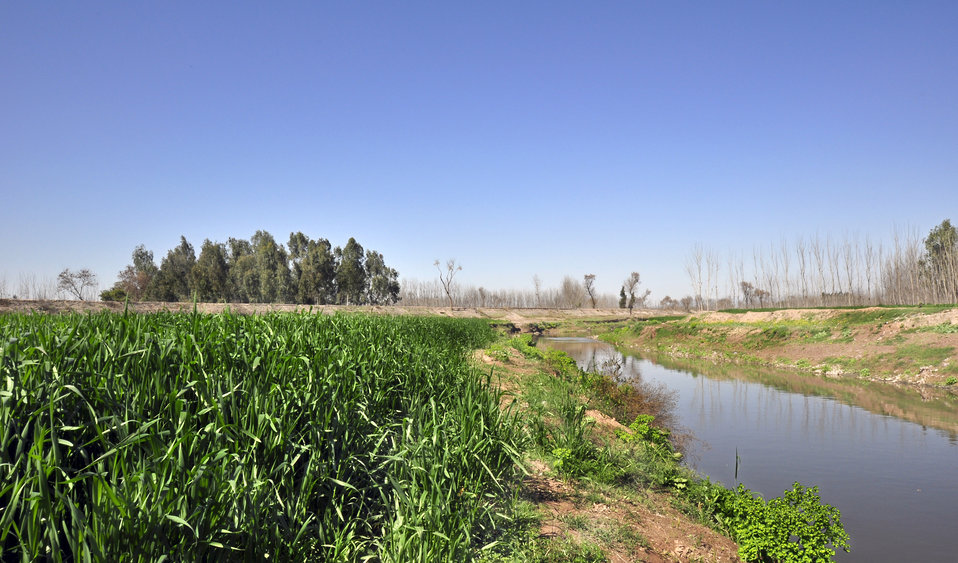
2011 March: USAID's Agricultural Recovery Program in 22 districts of Khyber Pakhtunkhwa, Punjab and Balochistan is an excellent example of the impact US development assistance can have. We have helped more than 500,000 farmers salvage the winter planting season and livestock after the floods. As a result, wheat farmers have nearly doubled their harvests. More than 5 million people have benefited. These photos show progress of the USAID Agricultural Recovery Project in Khyber Pakhtunkhwa.